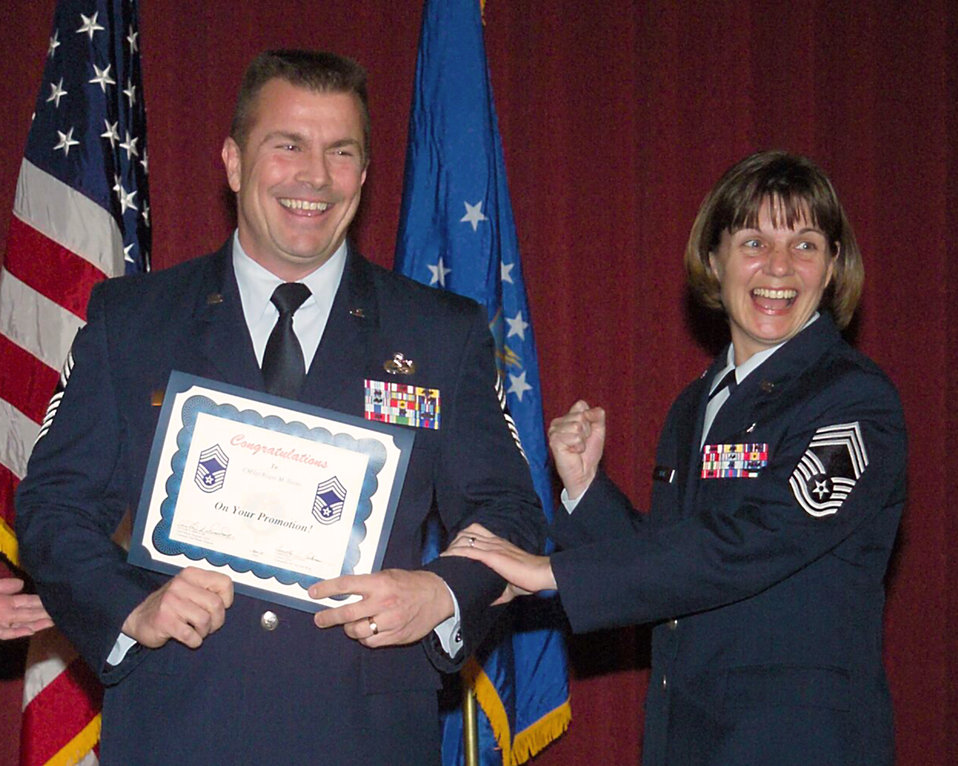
Two chiefs, one marriage, love for Air Force

HANSCOM AIR FORCE BASE, Mass. -- Chief Master Sgt. Lisa Sirois tacks chief master sergeant stripes on her husband, Roger Sirois, during his promotion ceremony here. The two married after high school in 1980 and then joined the Air Force together.